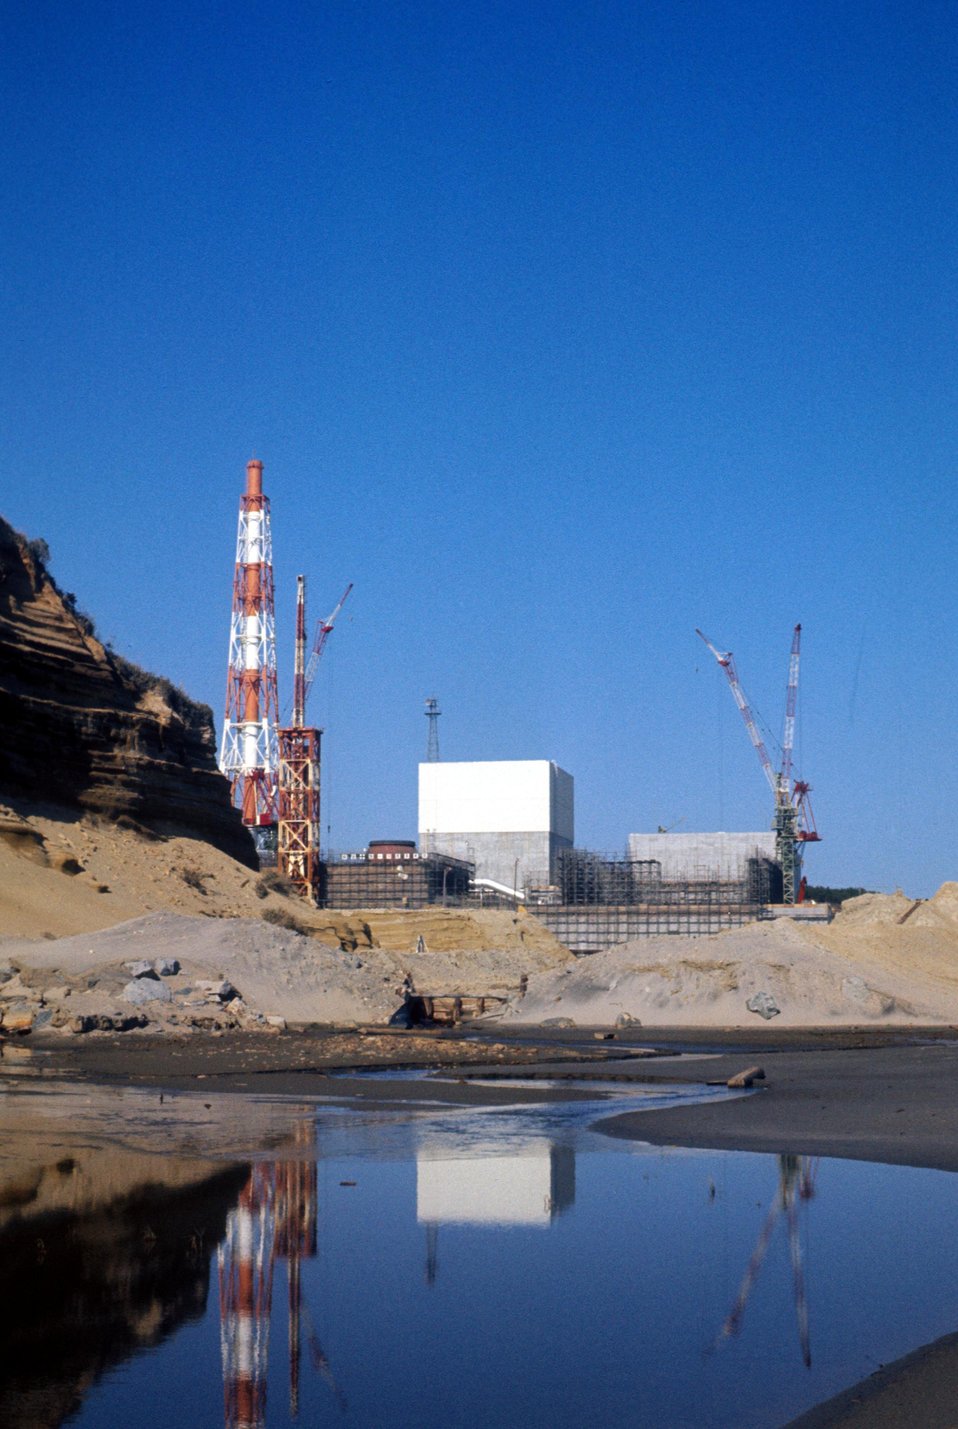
Tepco Nuclear Plant, Fukushina, Japan. c. 1970